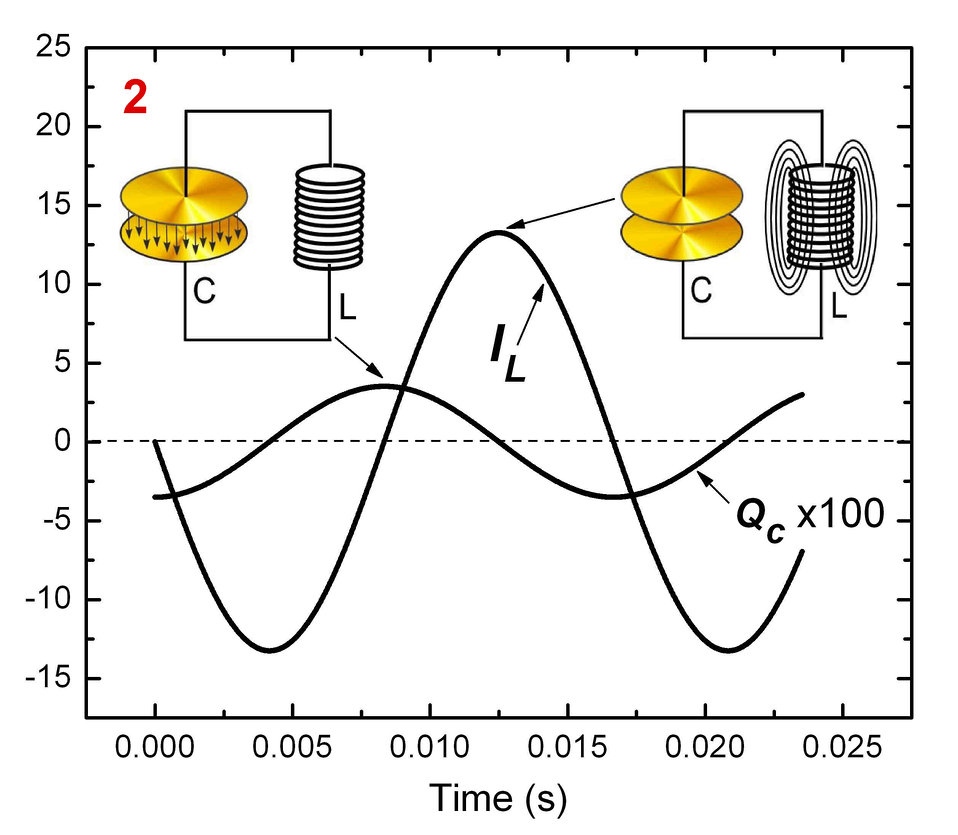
Power Factor Correction Devices

Power factor correction in operation. Current from the power line is reduced by introducing a charge, QC, on a capacitor (C), and creating an oscillating charge or current, IL, between the capacitor and the inductive load, such as a refrigerator.